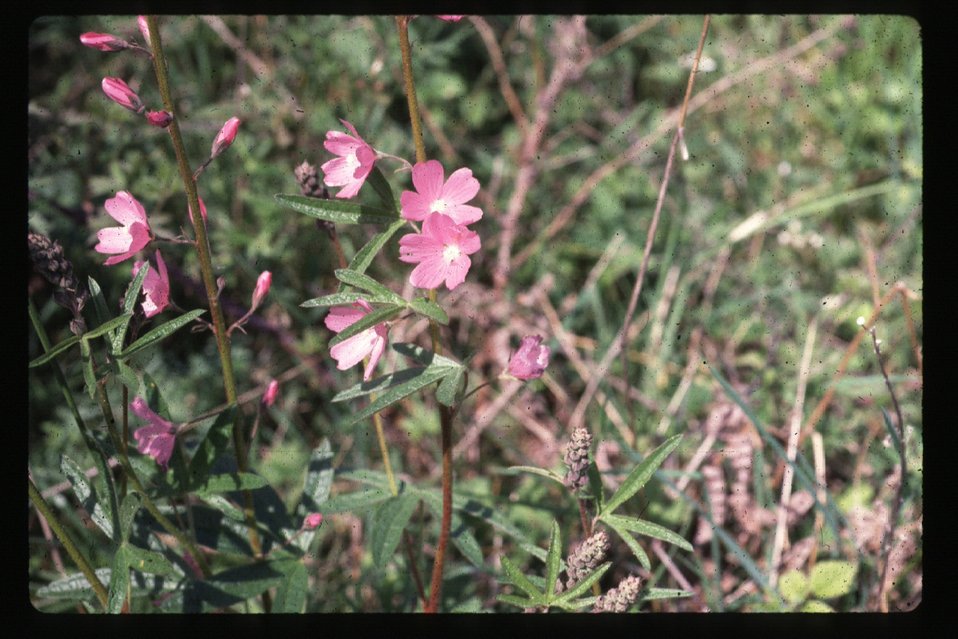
Wild hollyhawk Sidalcea Brush, grasses Wildflowers